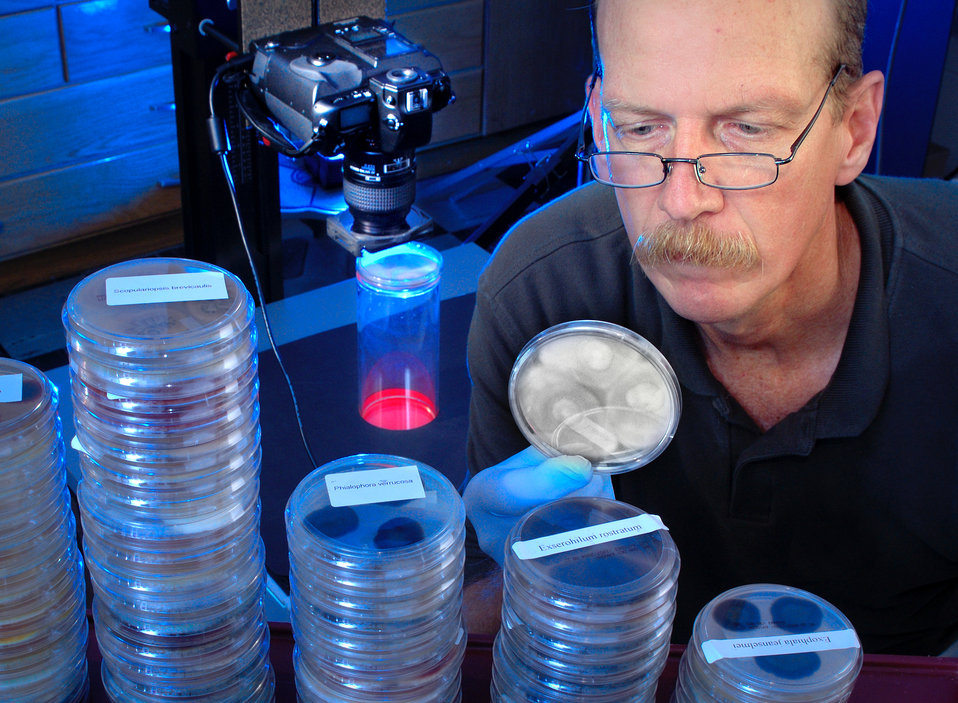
This 2004 image showed CDC bio-medical photographer James Gathany observing fungal specimens, which he was about to photograph. This image was actually a self portrait, for it was captured by Mr. Gathany in his own distinguished photographic style.